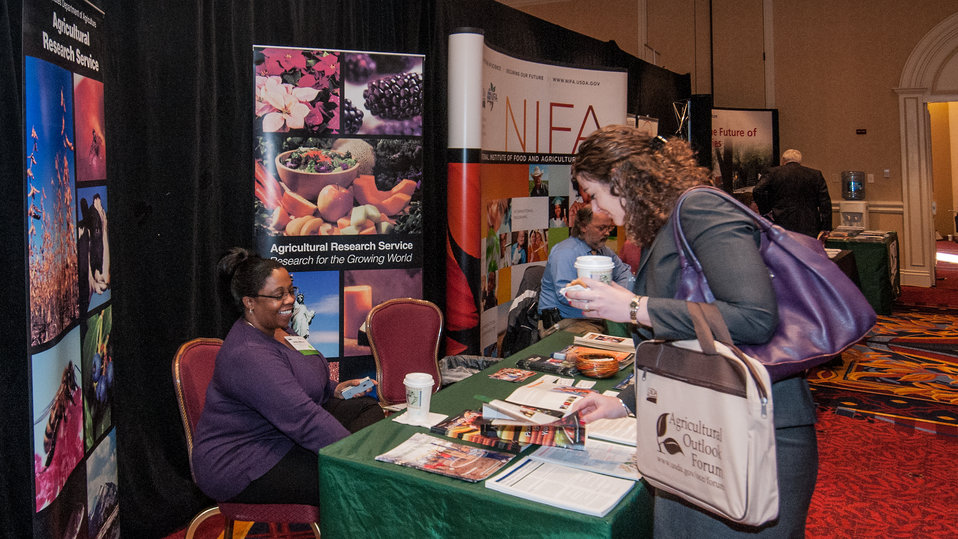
2013 Agricultural Outlook Forum, held at the Crystal Gateway Marriott Hotel, Arlington, Virginia on Thursday, Feb. 21, 2013. This annual Forum brings together producers, policymakers, and business, government, and industry leaders to meet, exchange ideas, and discuss timely agriculture issues.